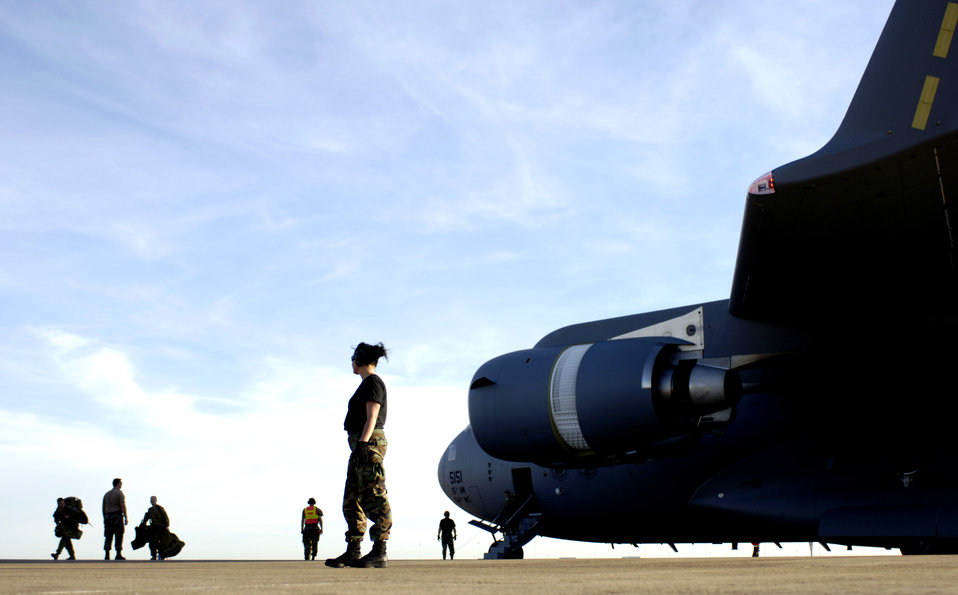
Australians learn from U.S. C-17 mission

Staff Sgt. Liselle Bracey watches as Australian Defense Force members leave a C-17 Globemaster III at Darwin, Australia, on Thursday, June 1, 2006. Sergeant Bracey is with the 15th Logistics Readiness Squadron at Hickam Air Force Base, Hawaii. Two C-17s from Hickam are helping the Australian Defense Force reposition its forces to better support peace operations in East Timor.